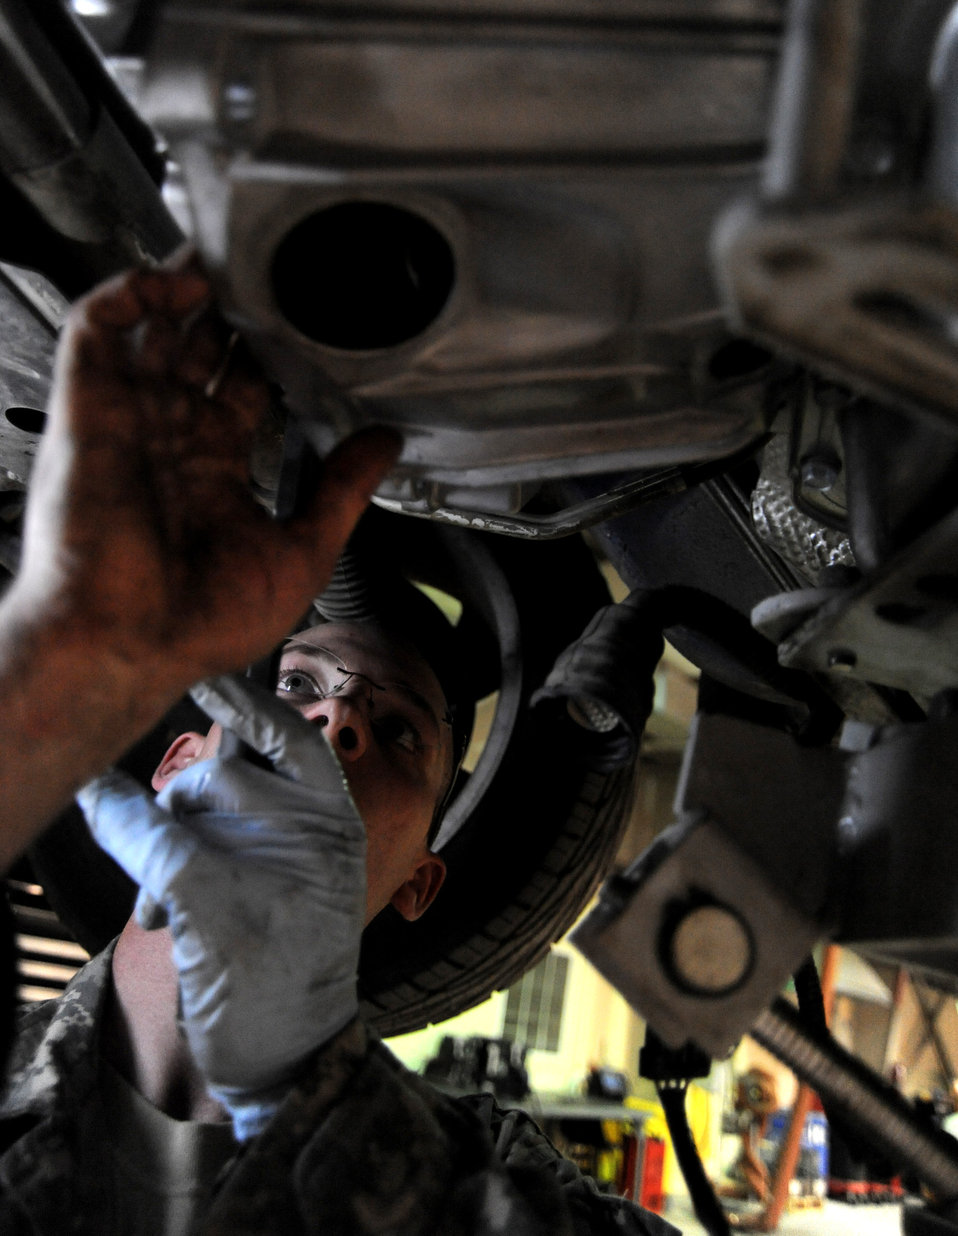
Let's get it started

Senior Airman Adam Owens lines-up the fly wheel on a Pontiac GTO with the torque converter of a new transmission April 26 at an air base in Southwest Asia. The GTO is used as a chase car to help guide U-2 pilots during takeoffs and landings. Airman Owens is a 380th Expeditionary Logistics Readiness Squadron, vehicle maintainer deployed from the 174th Air National Guard Base at Hancock Field, N.Y. He is from Binghamton, N.Y.